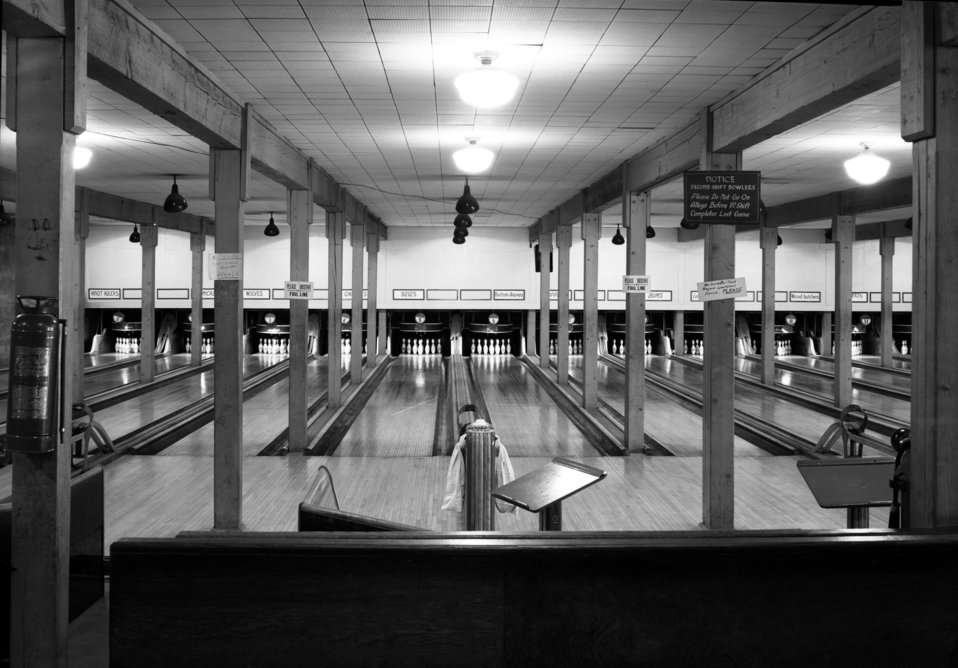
Grove Hall Bowling Alley Oak Ridge 1948

DOE photo Ed Westcott 5-24-1948 Oak Ridge Tennessee